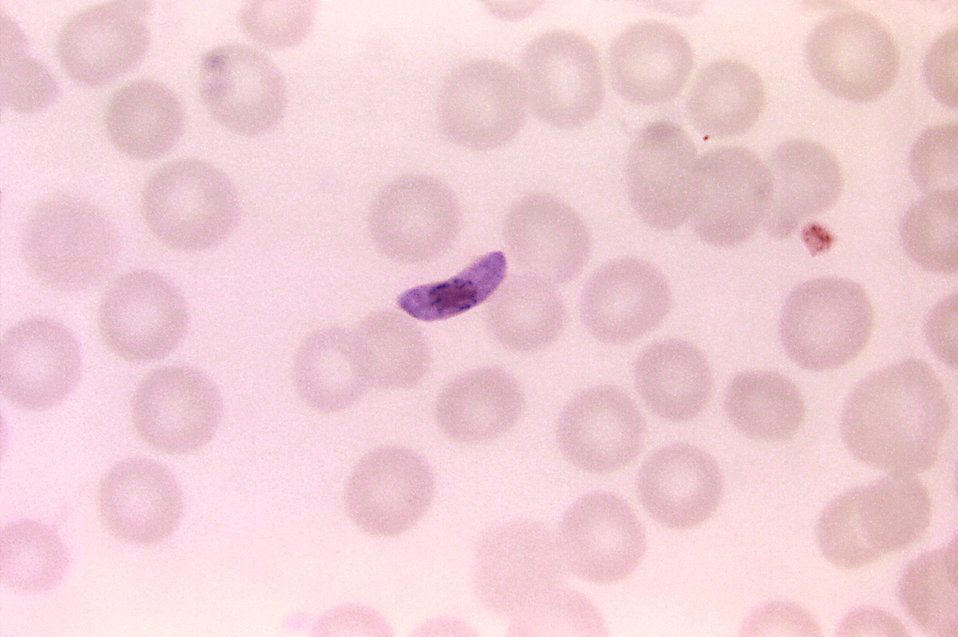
This thin film blood smear micrograph depicts a Plasmodium falciparum macrogametocyte parasite.